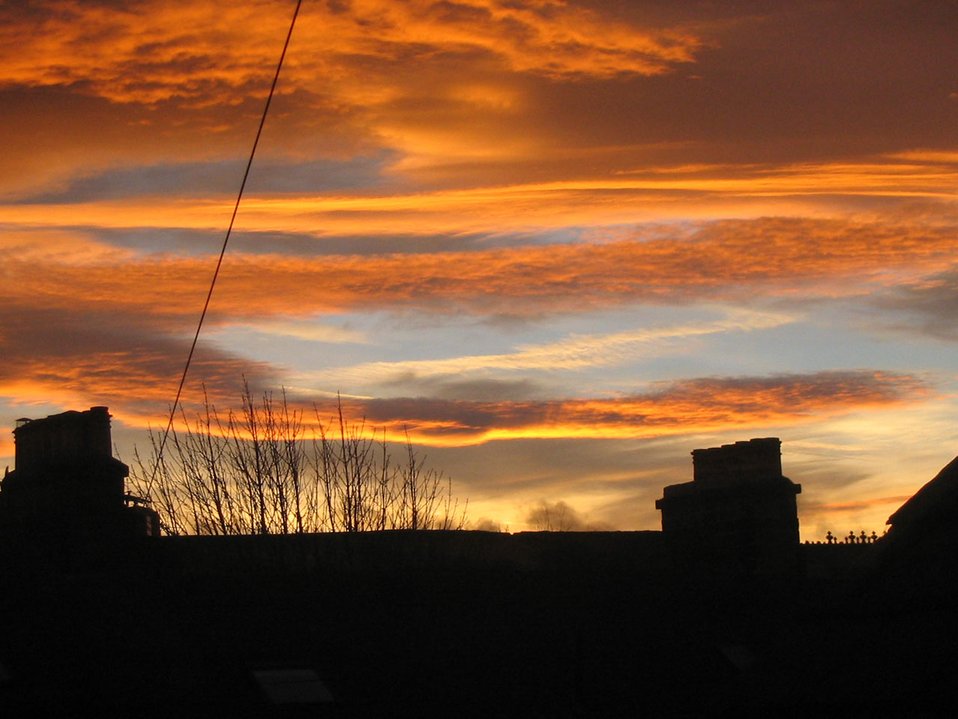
Sky at sunset

Orange sky at sunset.